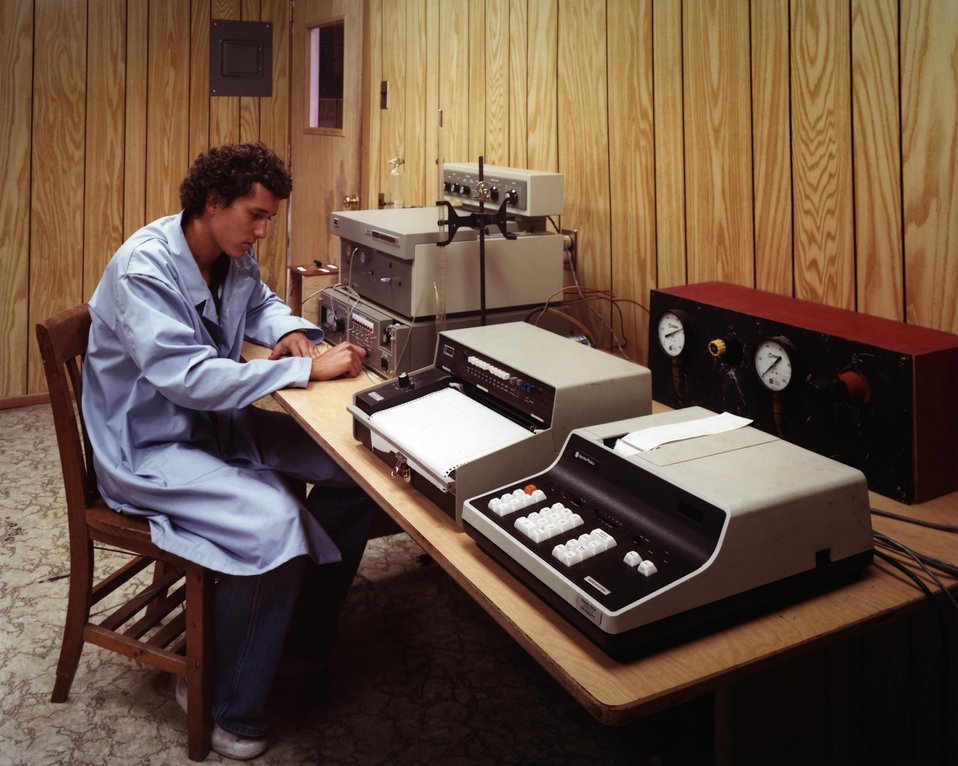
STEVE DURAN, STUDENT ASSISTANT, ADJUSTS THE GAS CHROMATOGRAPH AT SGFM PILOT PLANT.

THIS PROJECT ENTAILS CONDUCTING STUDIES IN AN EXISTING ONE- HALF TON PER-DAY TEST REACTOR, UTILIZING ANIMAL MANURES AND OTHER BIOMASS MATERIALS AS FEED STOCKS, TO DETERMINE THE INFLUENCE OF TEMPERATURE, RESIDENCE TIME, PRESSURE, AND FEED STOCK MATERIALS ON THE YIELD AND QUALITY OF THE PROCESS.